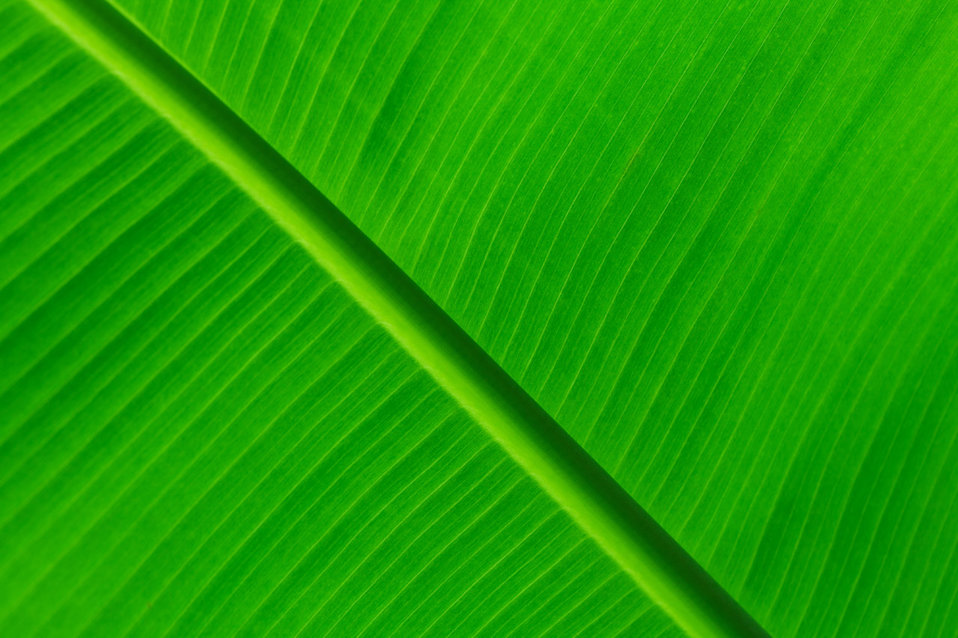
Green leaf background

Green leaf texture photo.